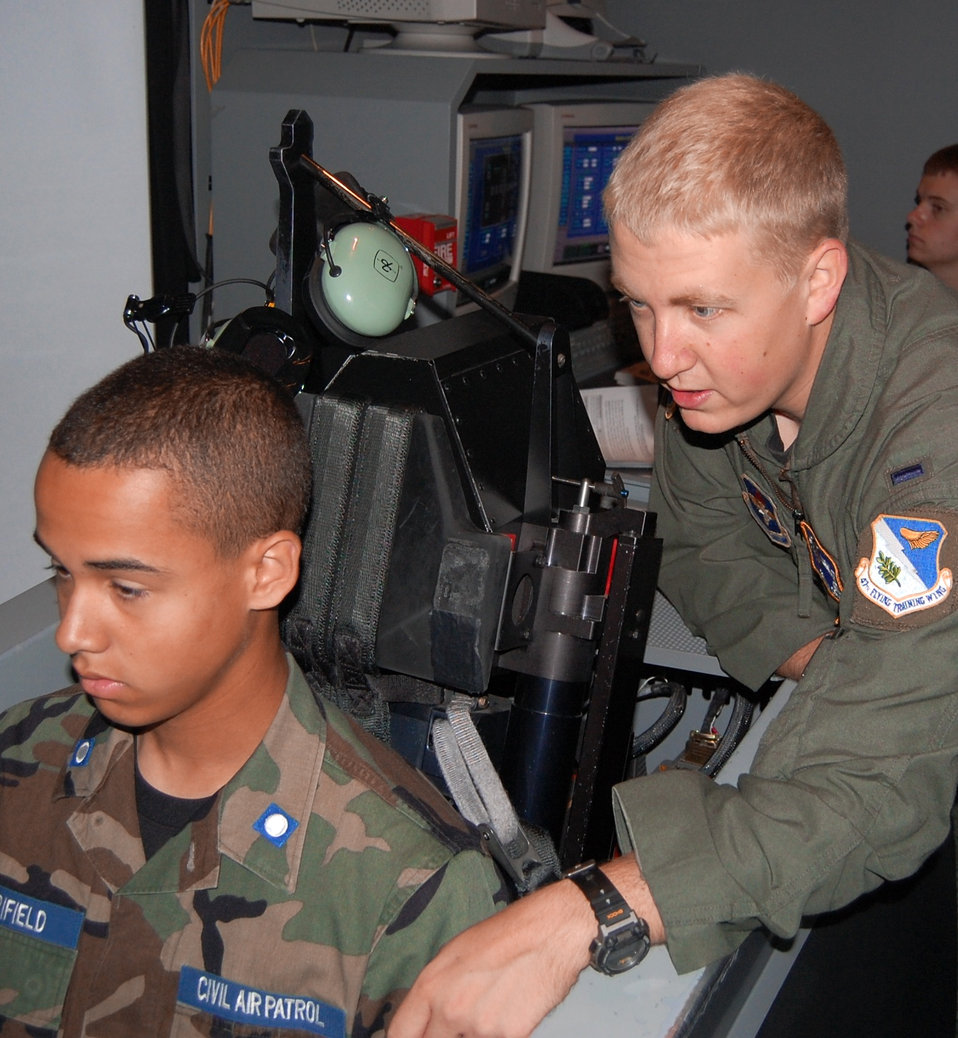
Civil Air Patrol

First Lt. Brian Crum guides Parker Merrifield, a Civil Air Patrol cadet, through a T-6 Texan II simulator ride June 21, 2011, at Laughlin Air Force Base, Texas. The CAP cadets spent a week at Laughlin AFB learning about various aspects of the 47th Flying Training Wing mission. Lieutenant Crum is assigned to the 47th Operations Support Squadron.